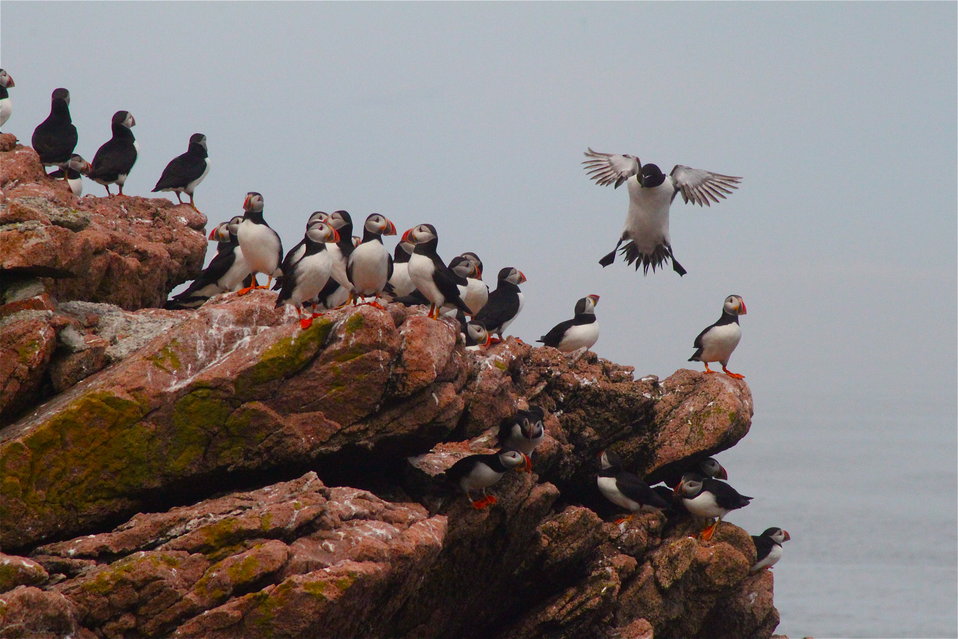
Razorbill Landing